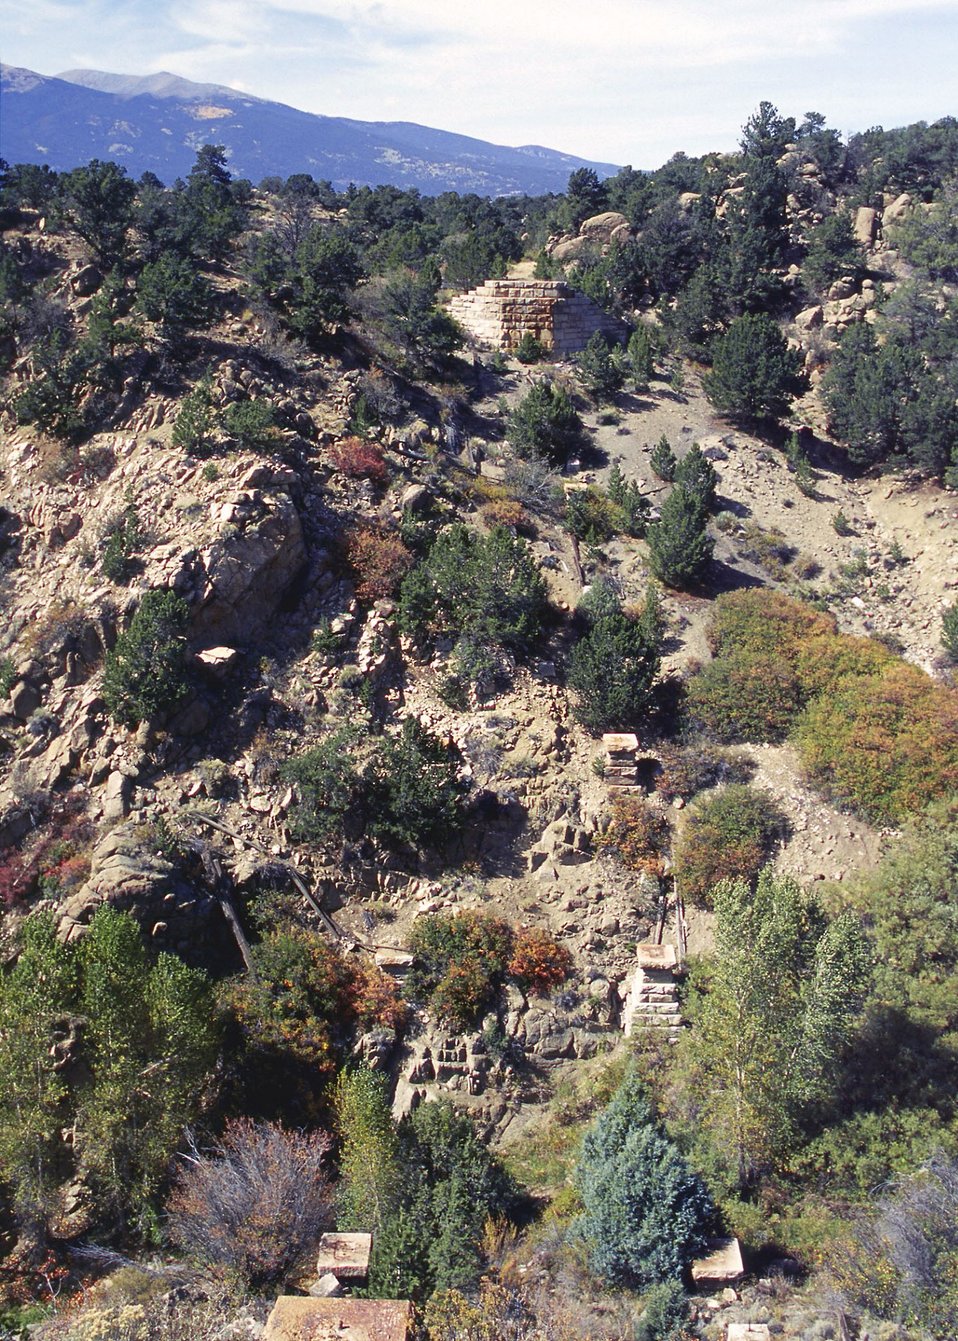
Midland Trial